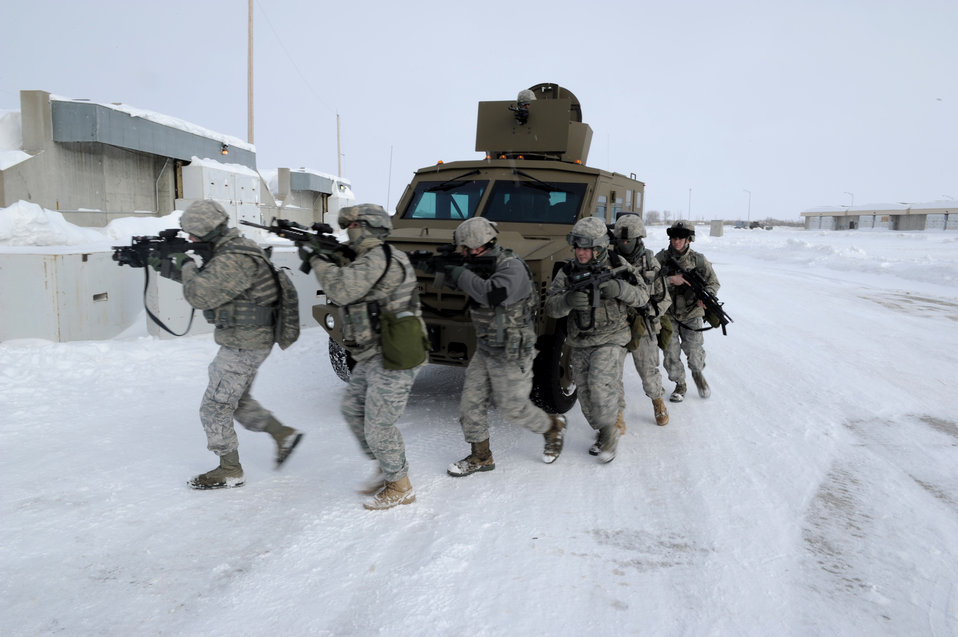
We're going in!

Security forces Airmen advance toward a door during a training exercise Jan. 24, 2011, at Minot Air Force Base, N.D. The Airmen are assigned to the 5th Security Forces Squadron.